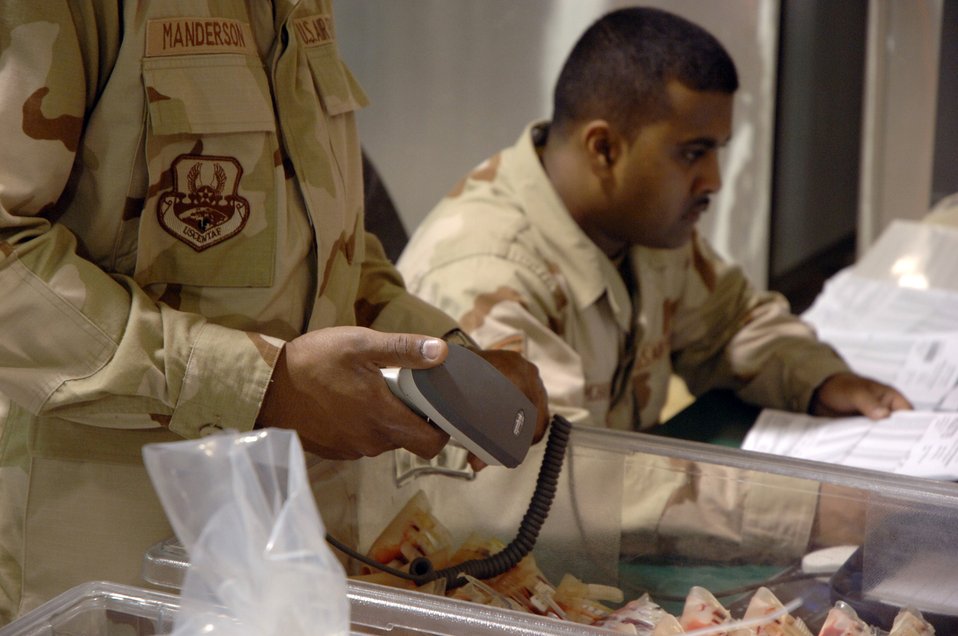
Blood samples

SOUTHWEST ASIA (AFPN) -- Airman 1st Class Roaquiem Manderson (left) and Staff Sgt. Ronell Ramcharitar inventory blood samples at the blood transshipment center here Jan. 28. The center gets blood from the United States and sends it throughout the region. Both Airmen are with the 379th Expeditionary Medical Support Flight and deployed from Langley Air Force Base, Va.